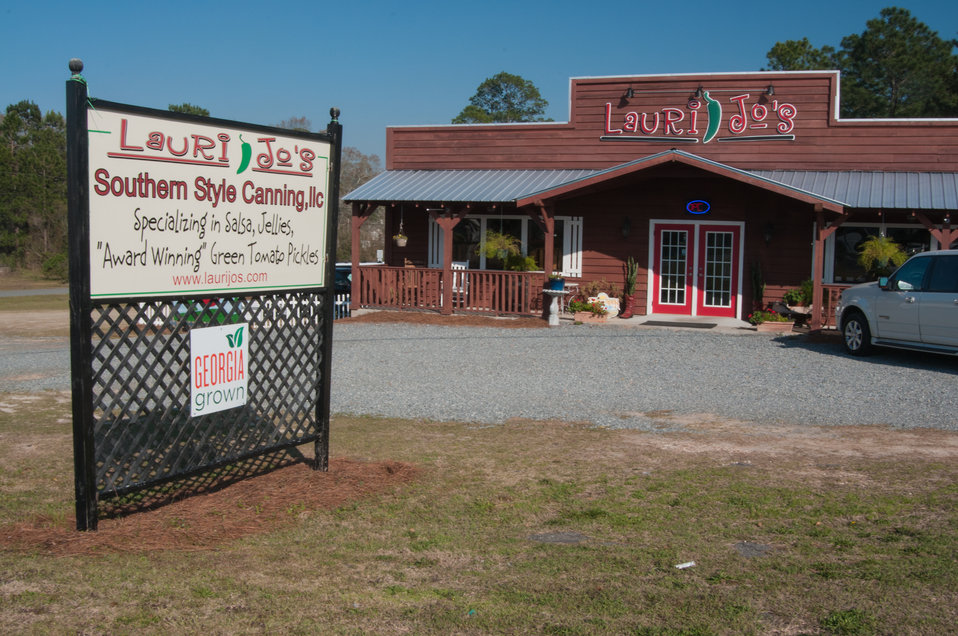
The sun shines on Laurie Jo’s Southern Style Canning business in Norman Park, Colquitt County, GA on Mar. 7, 2013. The business has increased its production to 12 items that now includes pickled green tomatoes, pickled okra, pickled asparagus pickled green beans, red and green pepper jellies, pineapple pepper jelly salsa and pepper sauce. Consumers may now purchase Lauri Jo’s Southern Style Canning Line in Whole Foods, Earth Fare and Kroger stores across 20 states. Lauri Jo Bennett applied for a U.S. Department of Agriculture (USDA) Rural Development (RD) Rural Business Enterprise Grant (RBEG) to help market her products. The grant from USDA has enable Lauri Jo to employ 26 people. The USDA Strike Force Initiative has designated Colquitt County, GA as a Strike Force county selected to receive assistance to relieve persistent poverty in historically high-poverty counties.